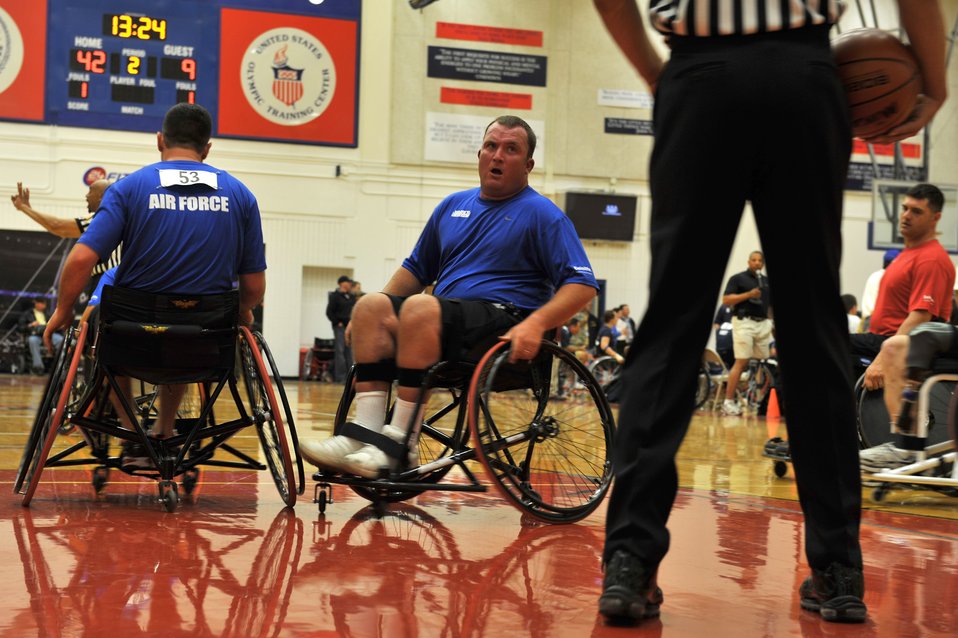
Warrior Games Team Air Force Basketball

Staff Sgt. Richard Pollock II looks to the referee as he prepares to shoot a free throw during a wheelchair basketball against the Marines May 11, 2010, during the Warrior Games held at the Olympic Training Center, Colorado Springs, Colo. The Air Force lost 68-13. Warrior Games competition began May 10 and finishes on May 14.